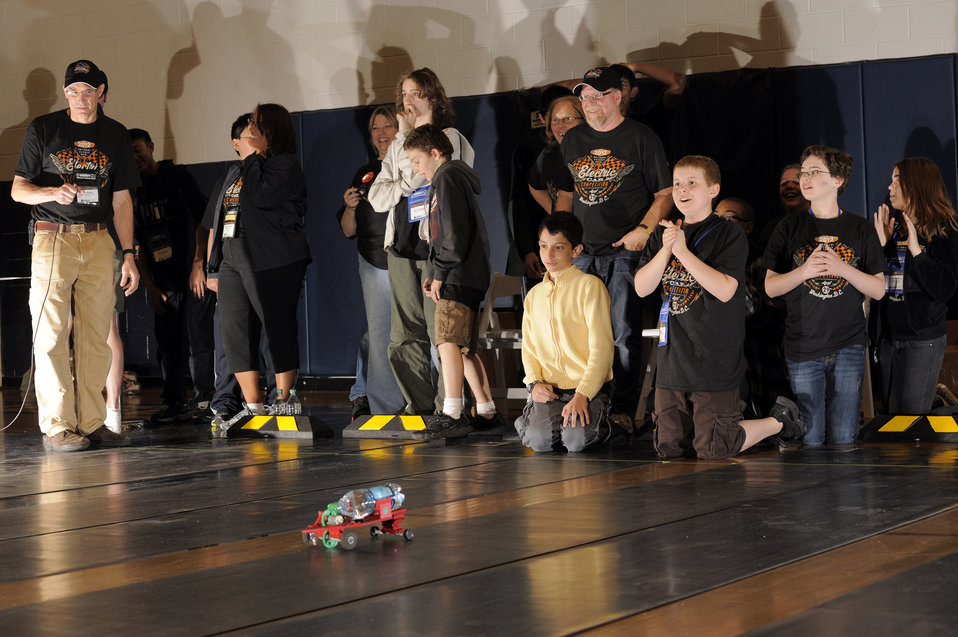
Middle school students compete at the lithium-ion battery powered model car challenge during the 2012 National Science Bowl in Washington, DC on April 29, 2012.